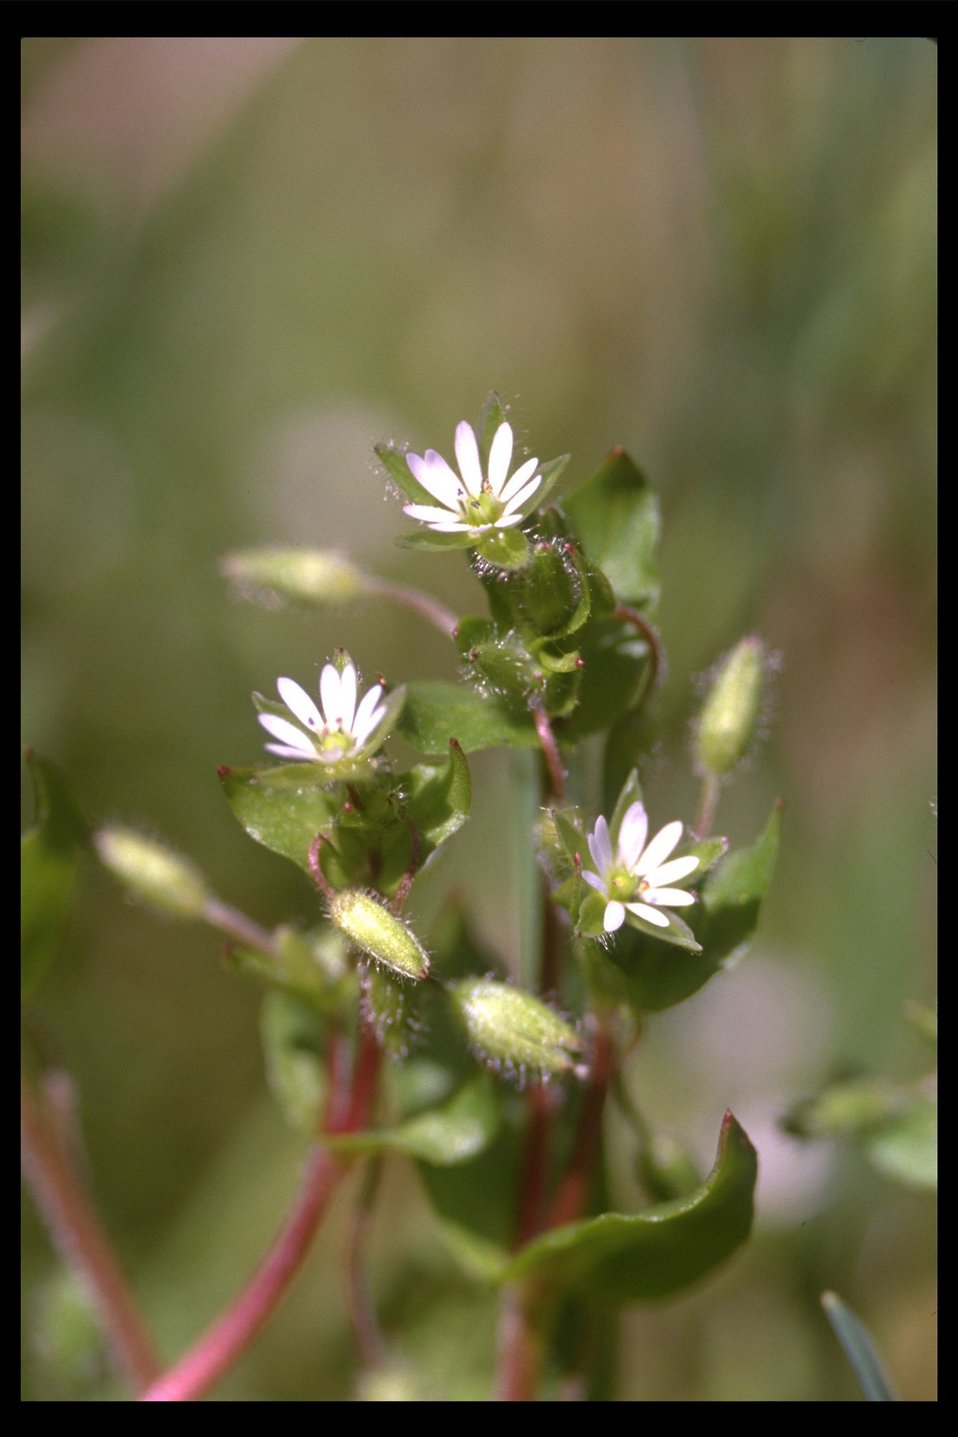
The Common Chickweed (Stellaria media) found in Shady Cove.